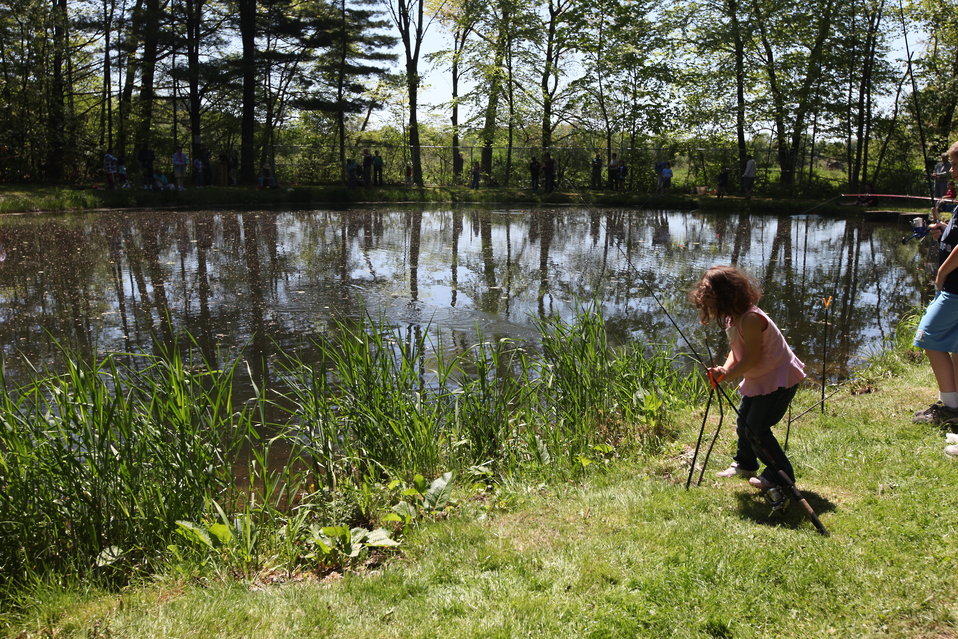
Youth Fishing Derby 2012

Megan Nagel/USFWS